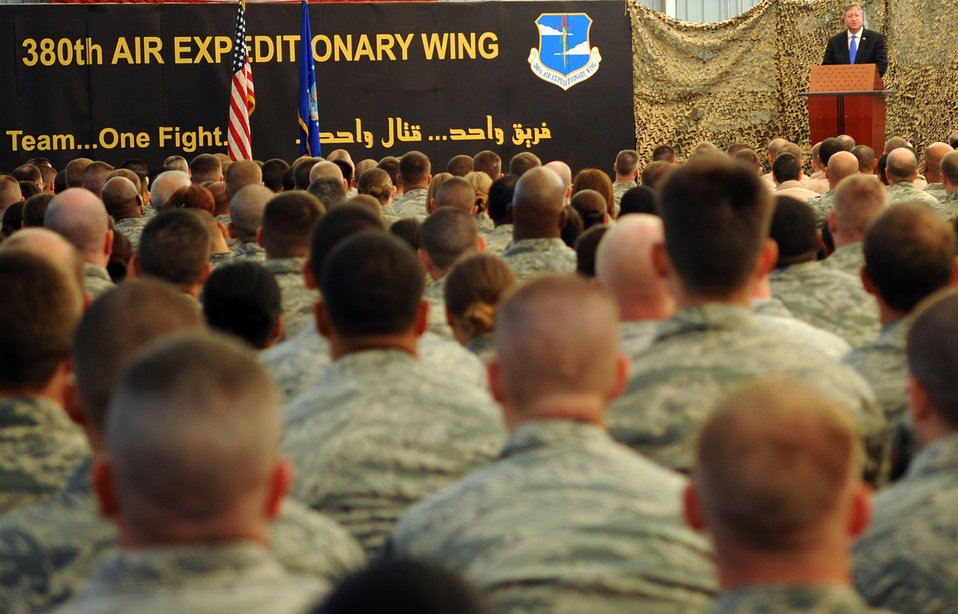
SecAF visits 380th AEW

SOUTHWEST ASIA - Secretary of the Air Force Michael Donley speaks to Airmen of the 380th Air Expeditionary Wing Dec. 23, 2011. During his two-day tour of the installation, Airmen, Soldiers and Sailors briefed the SecAF about current and future operations of the wing. In his speech, Donley focused on the importance of building partnerships with joint and coalition partners.